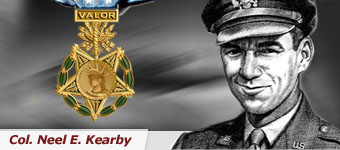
Col. Neel Kearby's ambition was to become a fighter pilot; not just a pilot, but the one with the most kills, the